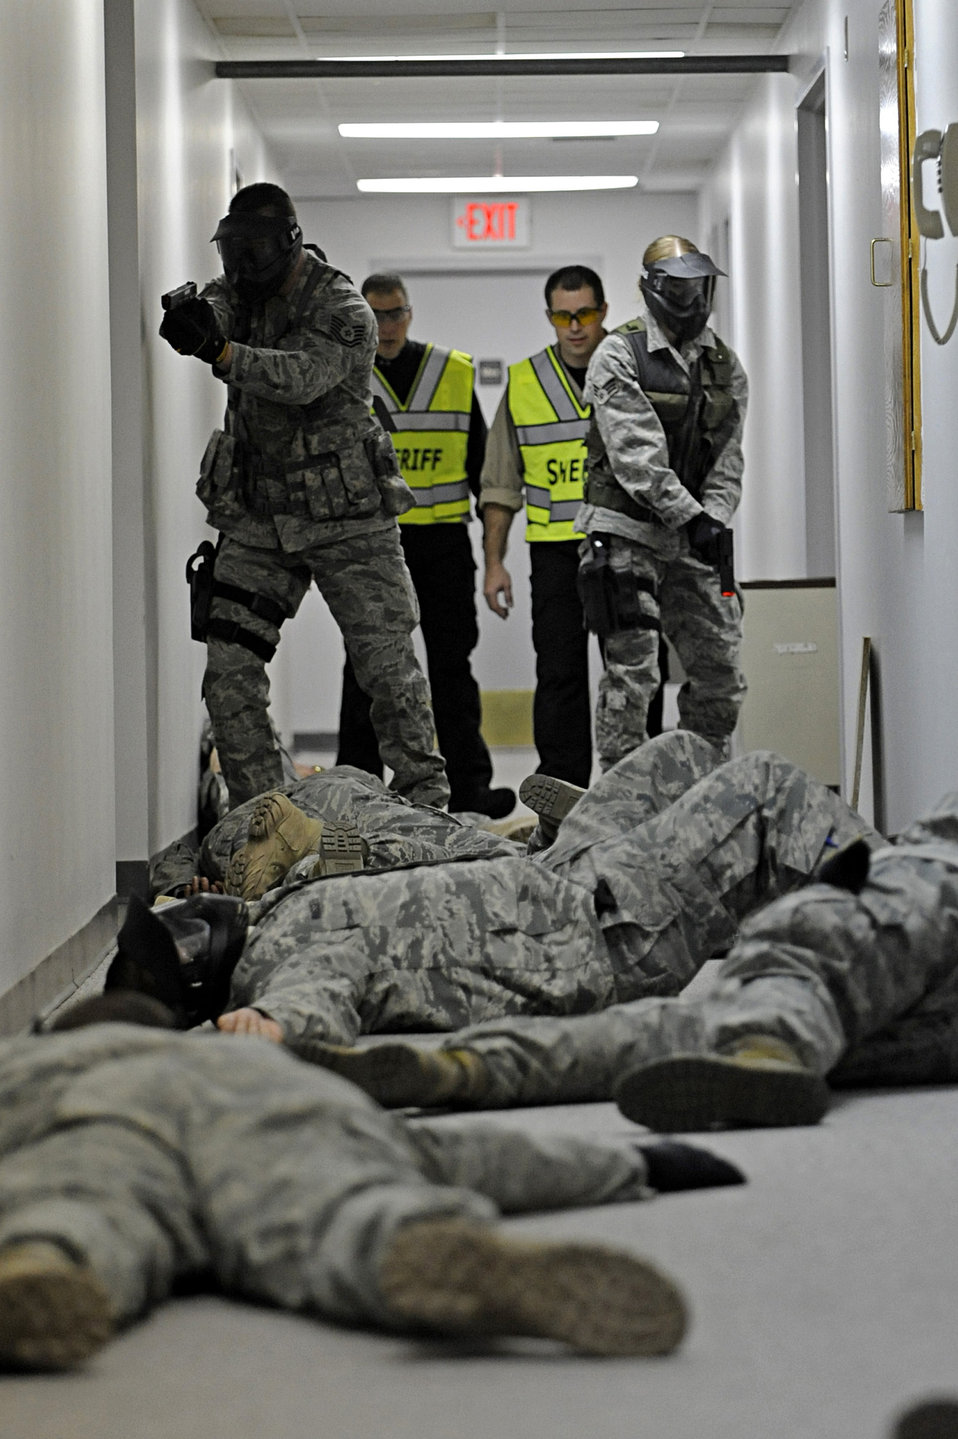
Ellsworth Airmen participate in training with local sheriff's department

Members of the 28th Security Forces Squadron participate in an armed threat training exercise Jan. 25, 2010, at Ellsworth Air Force Base, S.D. The training was designed to help Airmen understand and develop tactics against various scenarios.